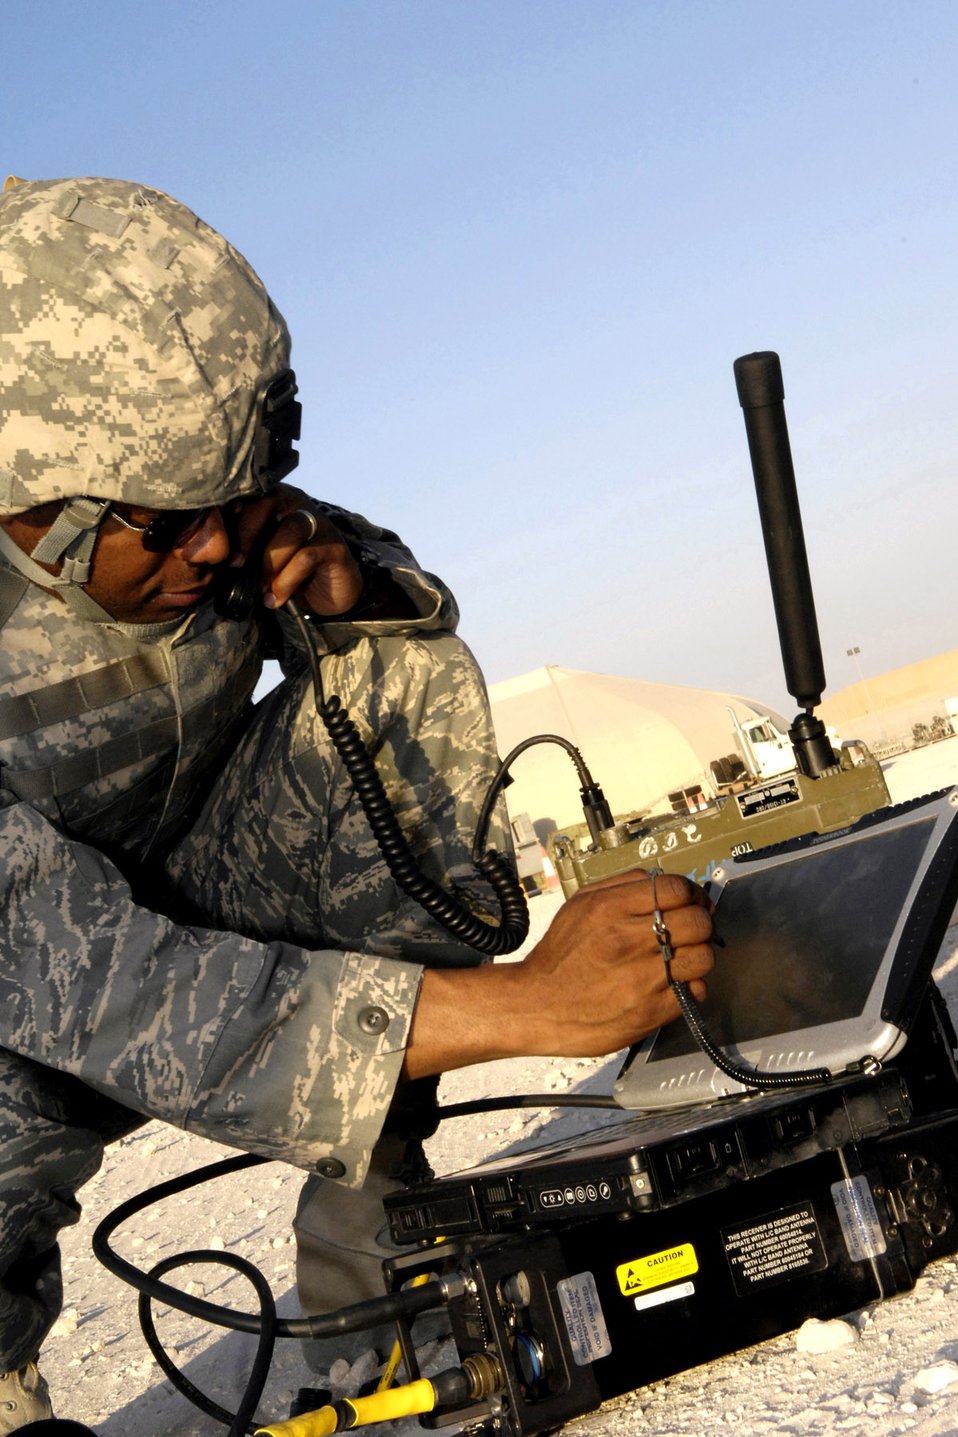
Attack controllers receive 2,000th remote receiver

Joint terminal attack controller Master Sgt. Chris Thompson communicates via a remotely operated video enhanced receiver Sept. 21in Southwest Asia. The ROVER, a small laptop with an external antenna, allows the JTAC to see from the eyes of the pilot, ensuring minimal collateral damage.